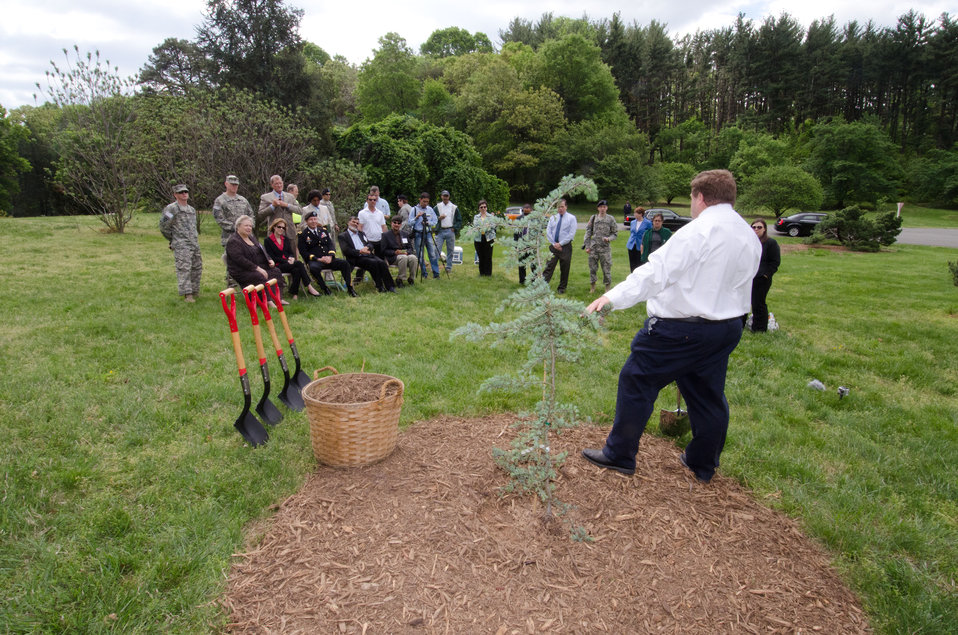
U.S. National Arboretum Gardens Unit Leader Scott Akers talks about the Cedrus deodara ('Karl Fuchs') that will be the first planted in these grounds, on Friday, April 29, 2011 in Washington, DC. The tree is originally from Pakta Province and the most important tree in Afghanistan for timber.